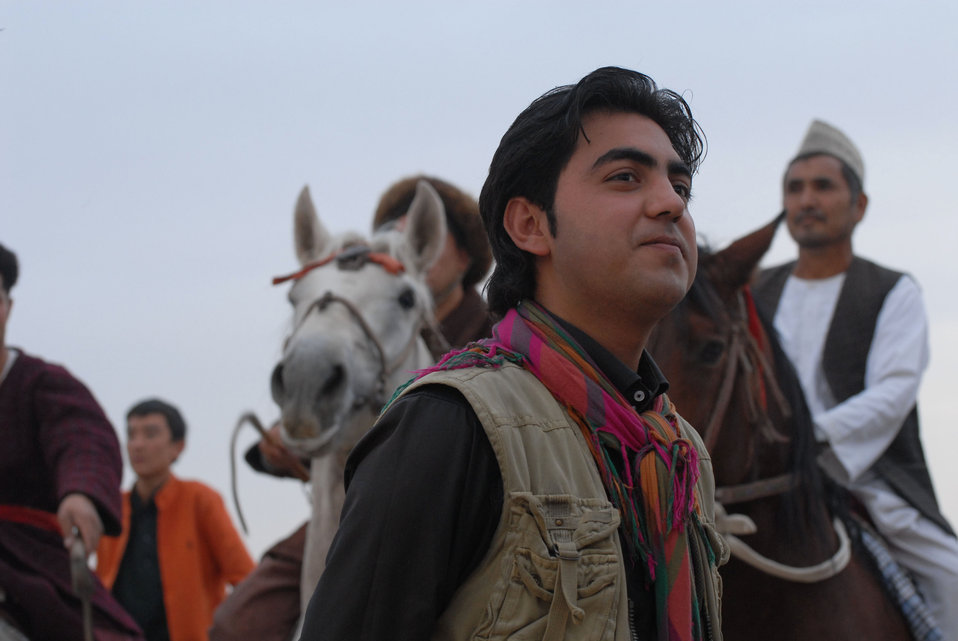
'On the Road' in Balkh Province